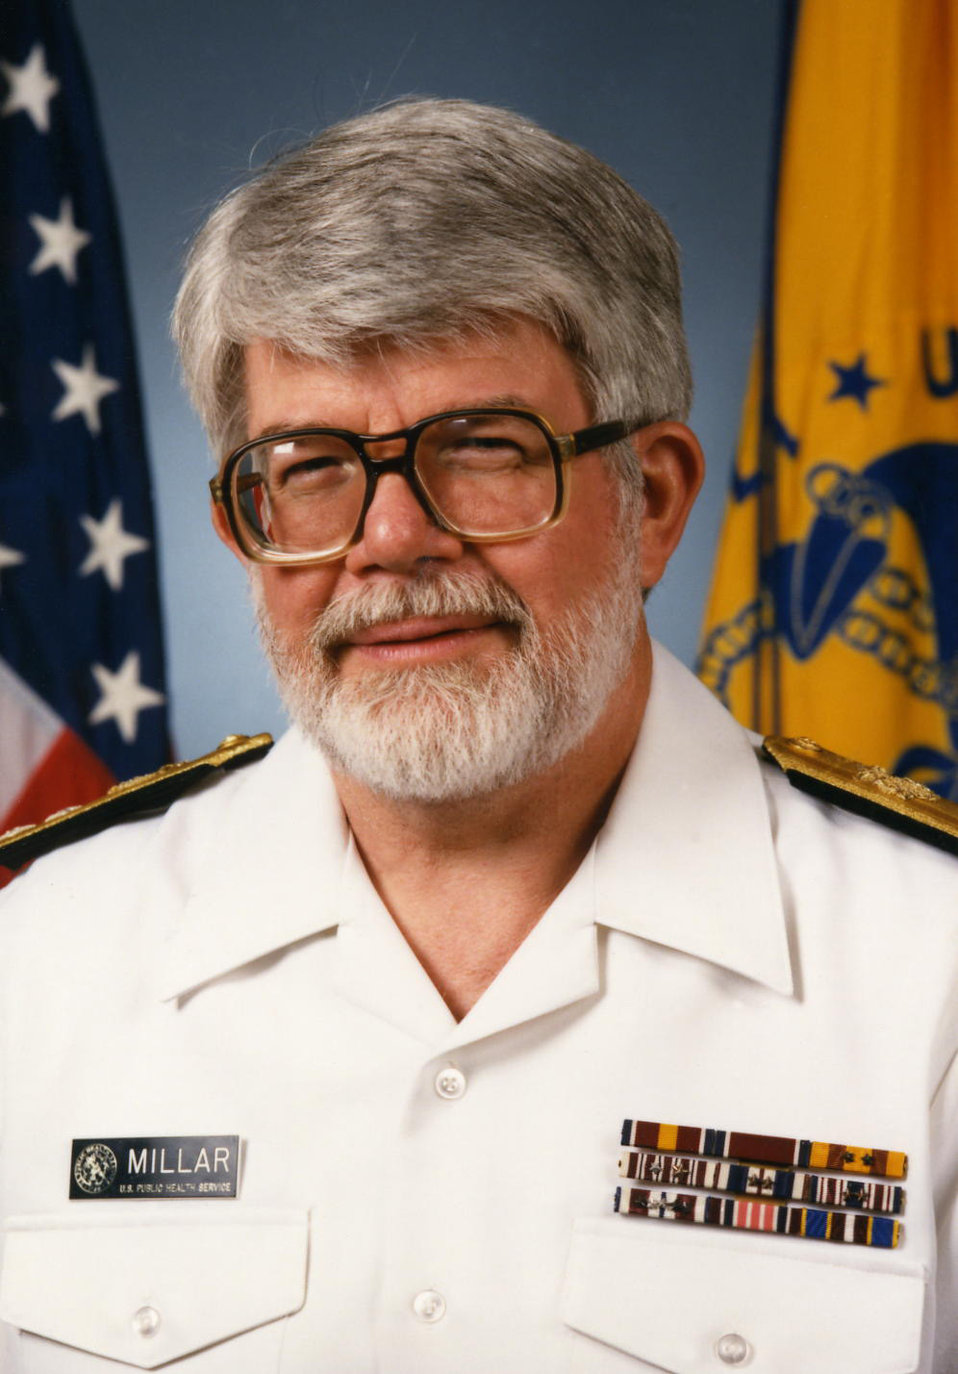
J. Donald Millar, M.D., M.P.H

This was a photographic portrait of J. Donald Millar, M.D., M.P.H., once the director of the smallpox eradication campaign in West and Central Africa.